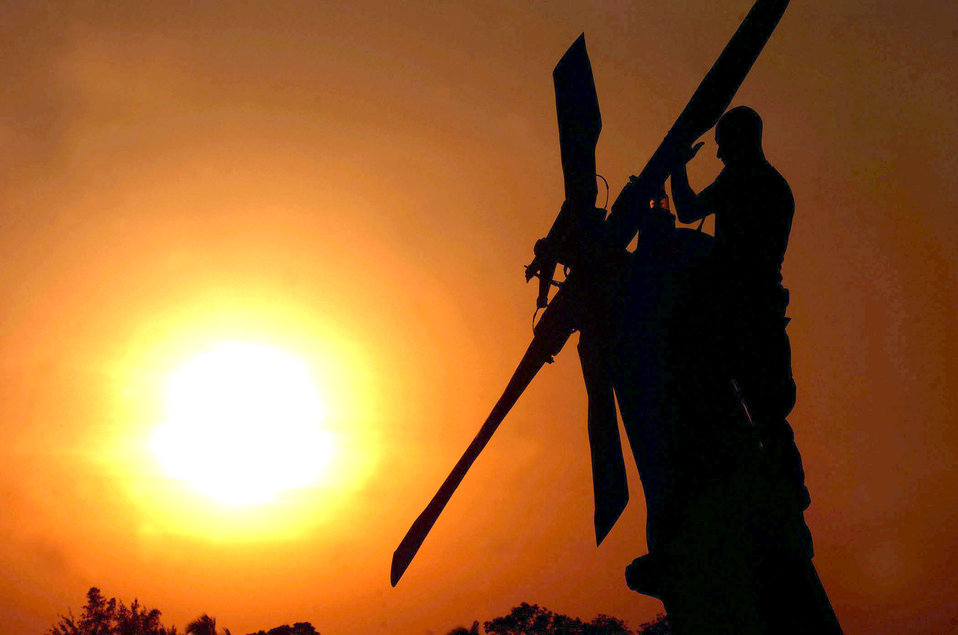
Keeping them flying

COLOMBO, Sri Lanka -- Senior Airman Russell Asbel inspects the rotor blade on his HH-60G Pave Hawk helicopter after an Operation Unified Assistance mission here. Airman Asbel, a crew chief, and others from the 33rd Rescue Squadron at Kadena Air Base, Japan, are helping move relief supplies to tsunami victims.